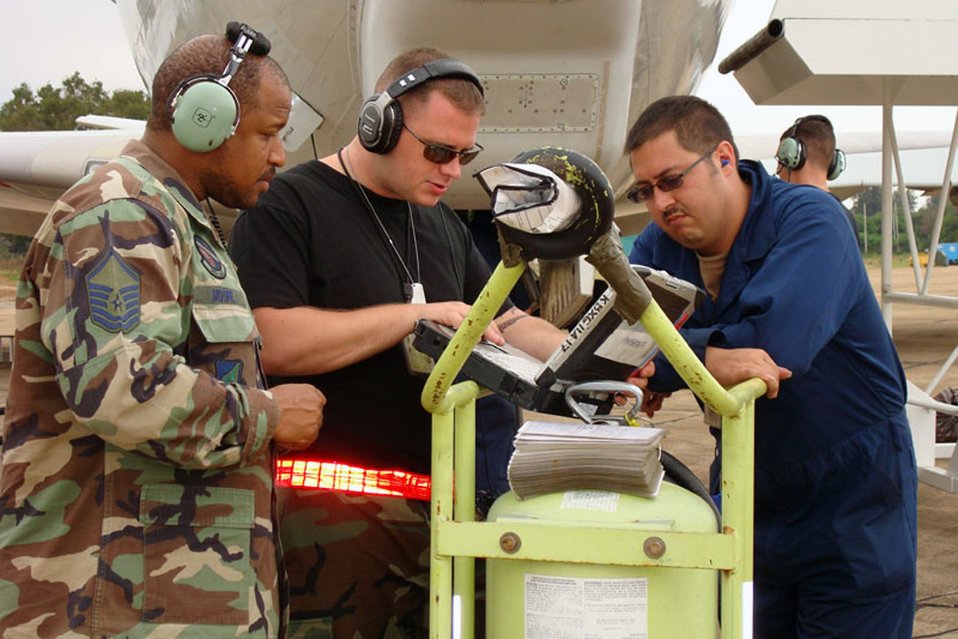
Deployed AWACS aircrew overcome unique challenge

Master Sgt. Zerian Moore reviews electronic technical orders with his squadron maintainers after an E-3 Sentry landed. Aircrews from the 961st and 962nd Airborne Air Control Squadrons worked together to perform a quick turnaround to ground-refuel an E-3 Sentry and was still able to complete its mission Feb. 3 at Korat Royal Thai Air Base. Sergeant Moore is the lead production superintendent for the 961st Airborne Air Control Squadron at Kadena Air Base, Japan.